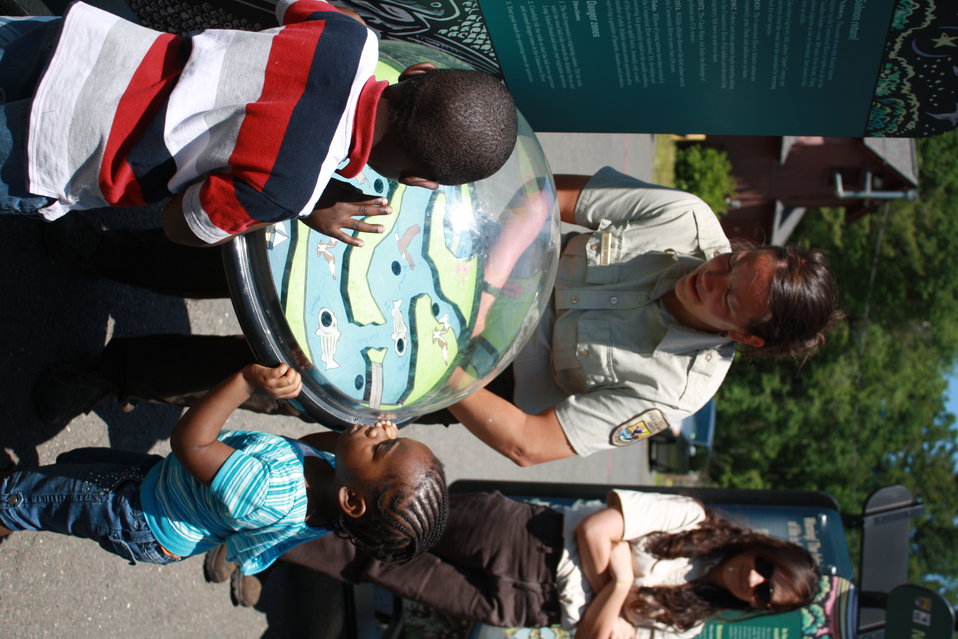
Exhibits at the WOW Express

WOW Express at Keney Park in Hartford, Conn.